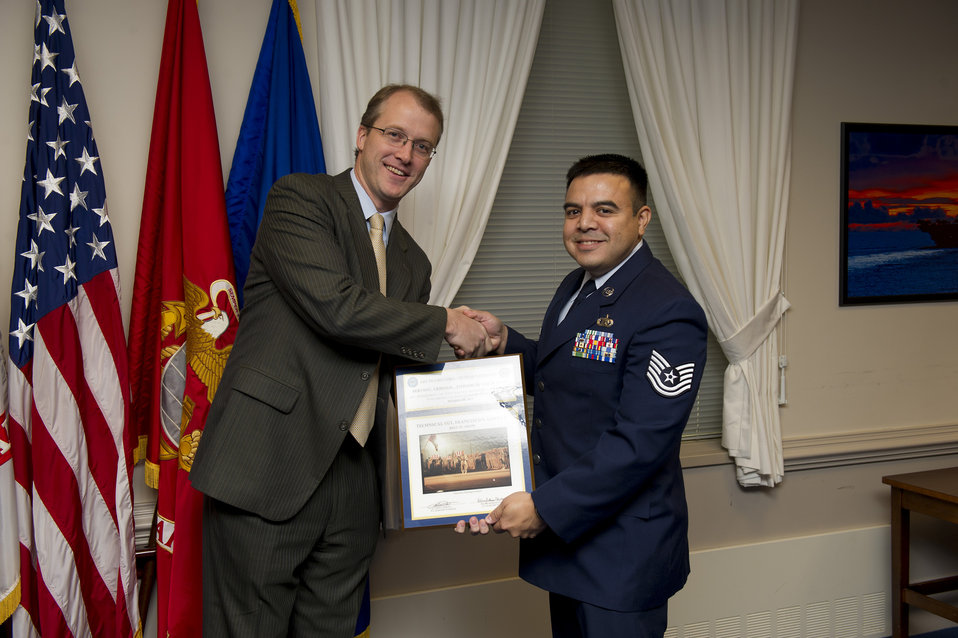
Winning shot and smiles II

Pentagon Press Secretary George E. Little, left, hands over the